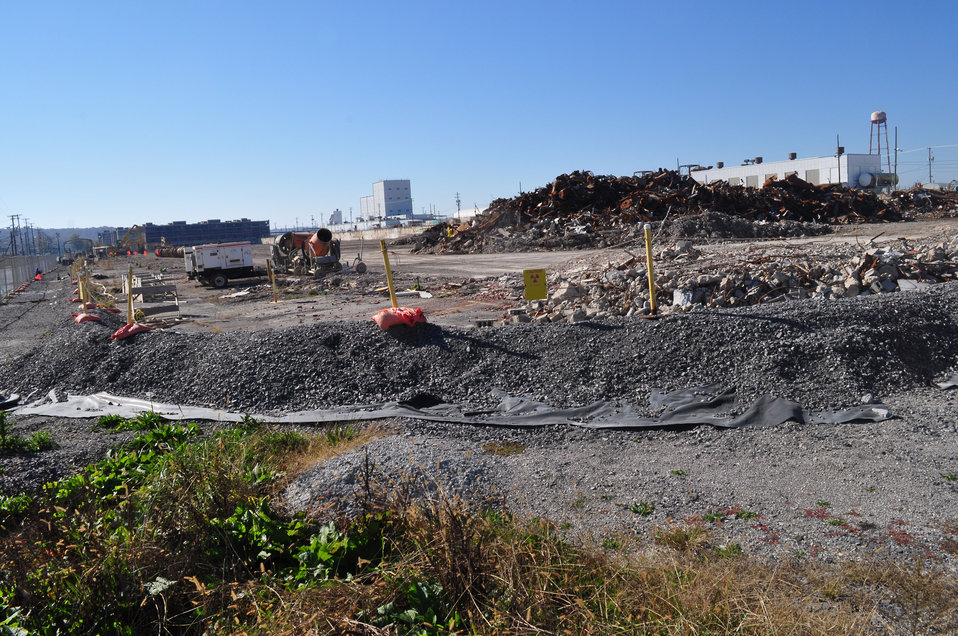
K-25 Beginning of North Tower Demolition

12-160-0406 DOE photo Lynn Freeny 10-24-2012 Oak Ridge Tennessee